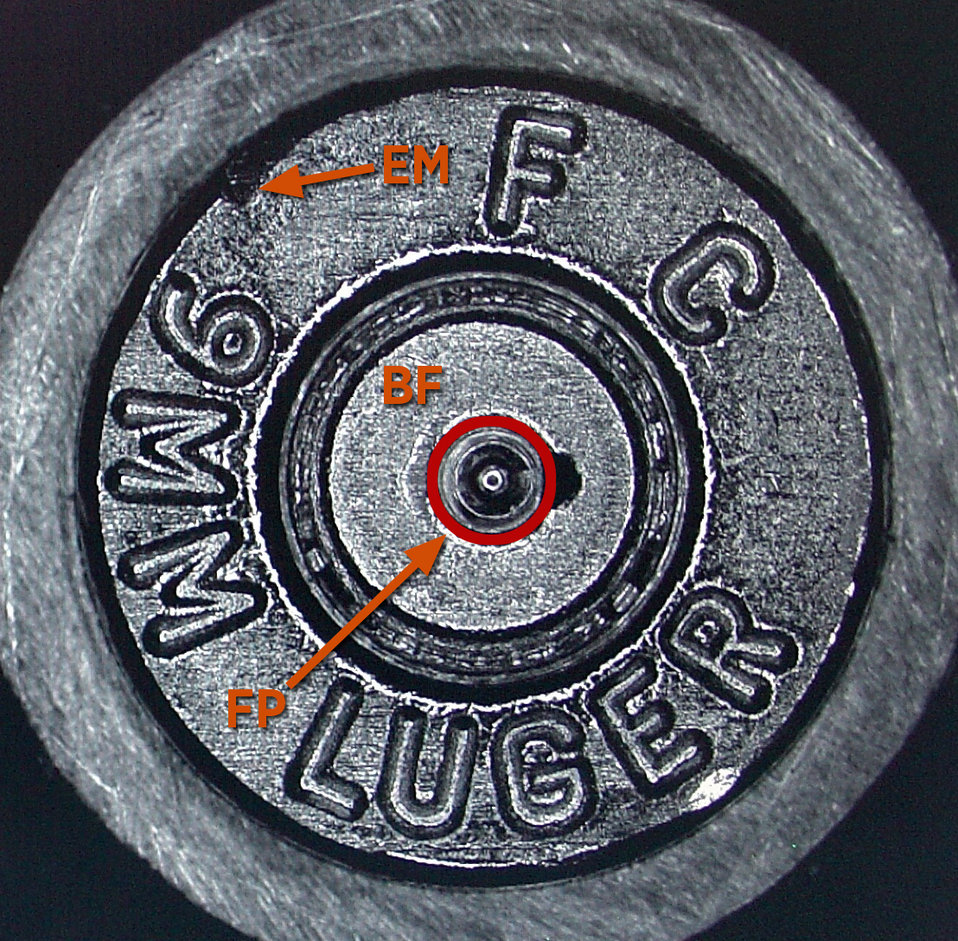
Cartridge Case

This cartridge case shows the three distinct marks, or 'signatures,' impressed on its surface when it was fired by a gun: the firing pin impression (FP), the breech face impression (BF) and the ejector mark (EM). NIST's standard casing ensures that forensic labs can accurately match signatures on shells found at crime scenes with images in a national database.